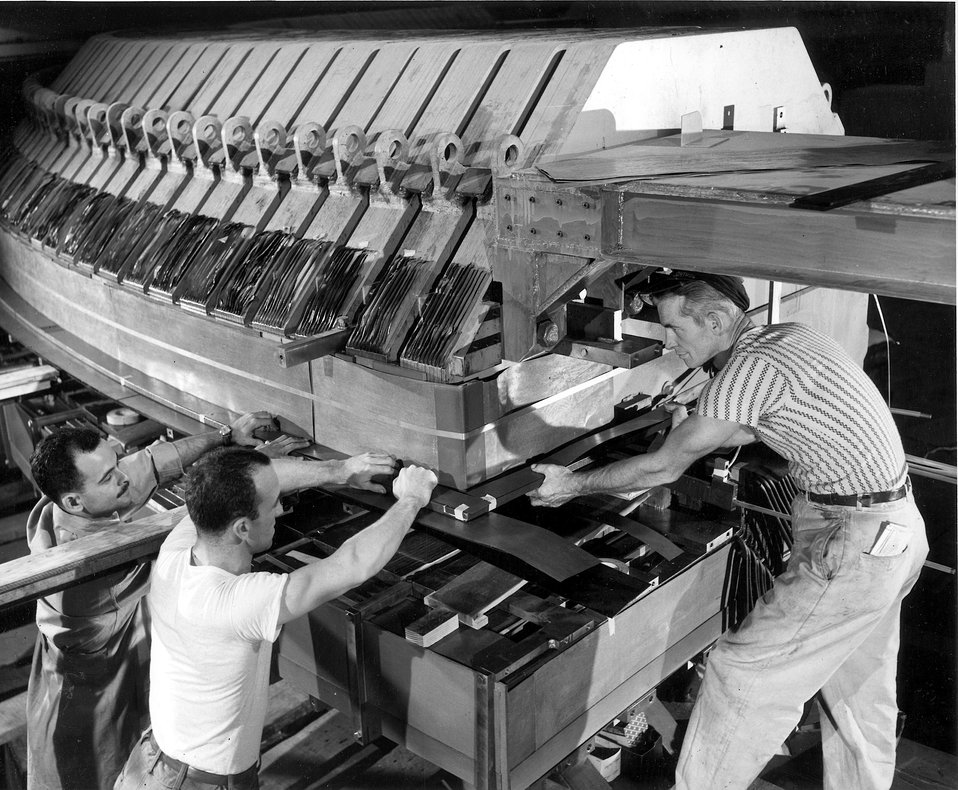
Installation of upper nose coil of main magnet winding. c. 1950